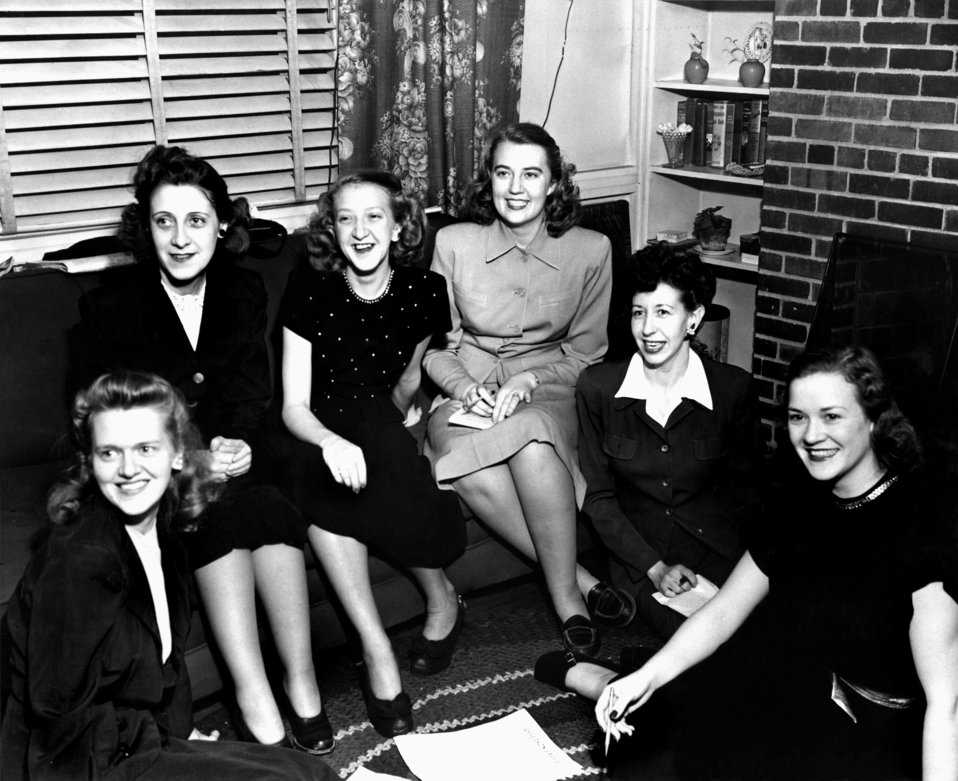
Beta Sigma Phi Planning Committe for Dance Feb 13 Oak Ridge 1940s

623 DOE photo Ed Westcott L to R Mary Anne King, Mabel Tyler, Martha Soloman, Velma Campbell,Edna Lee Finley, and Mabel Thompson Oak Ridge Tennessee